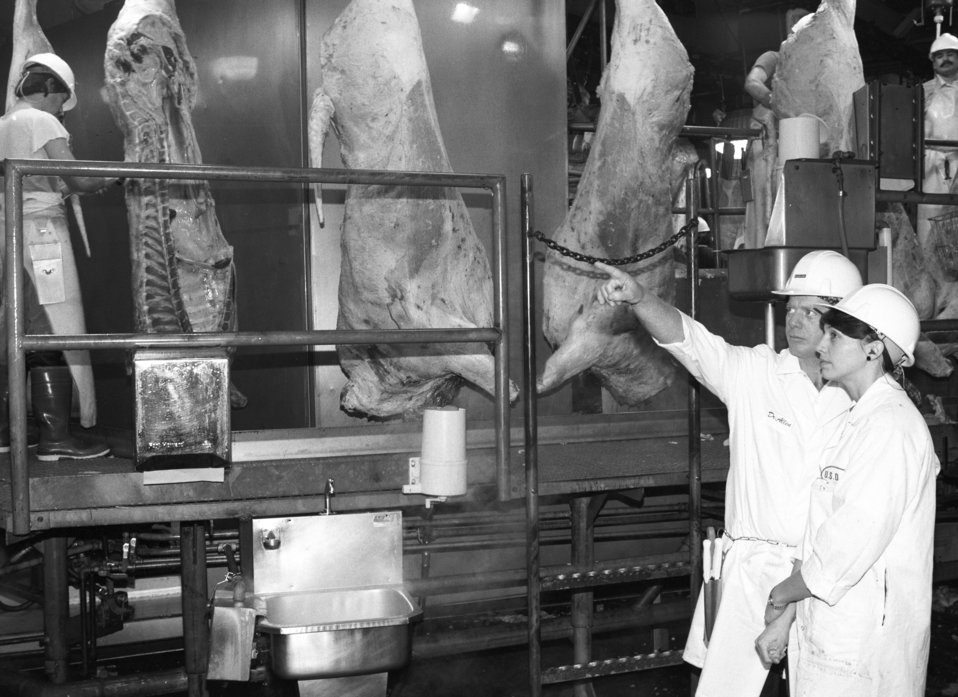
U.S. Department of Agriculture (USDA) Food Safety Inspection Service (FSIS) inspectors inspect beef using a Streamline Inspection System (SIS) at a processing plant in Plainview, TX on January 22, 1991.